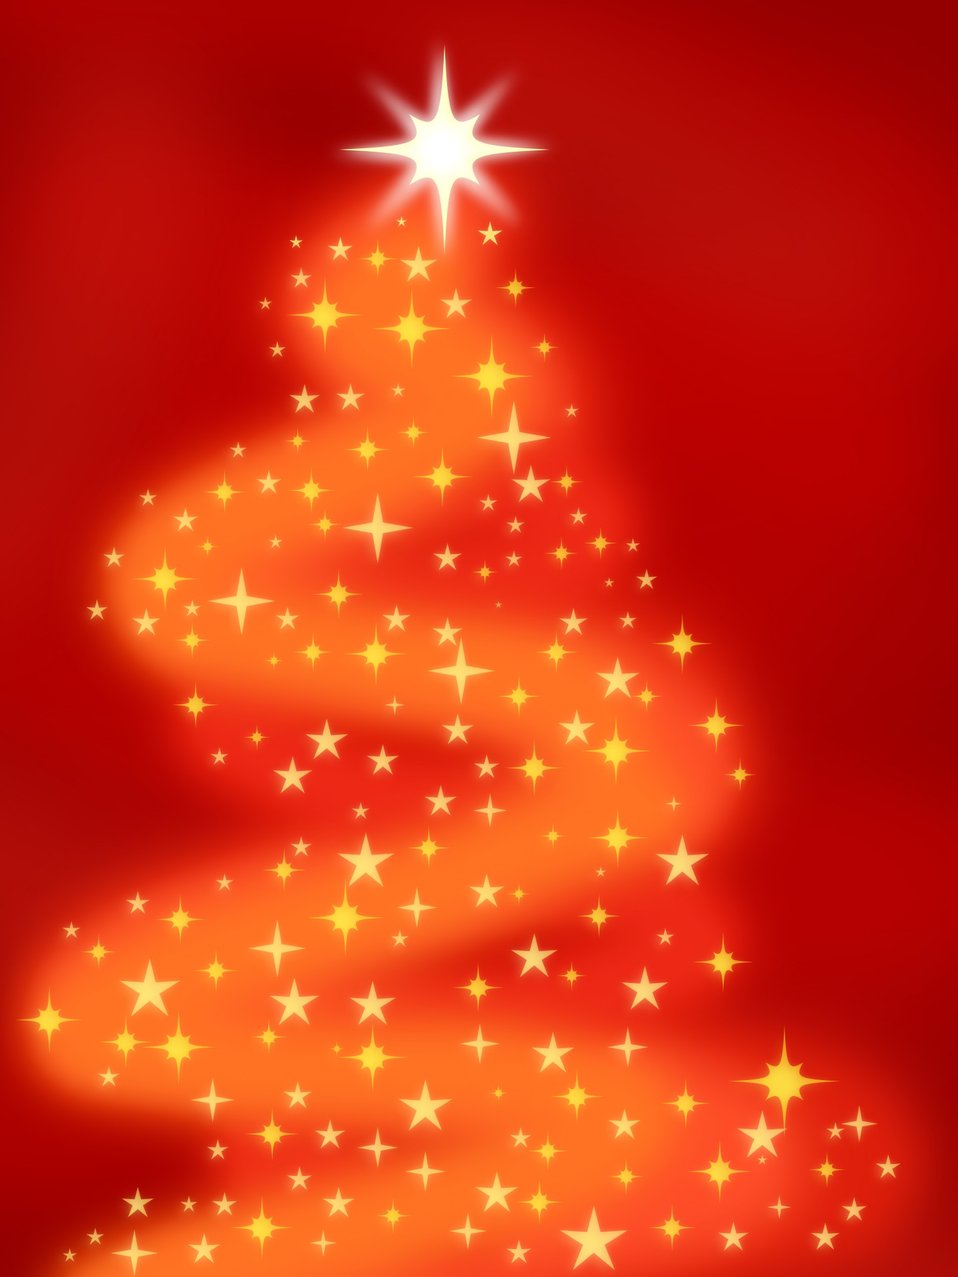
Star trail

Sweep of stars on red background.